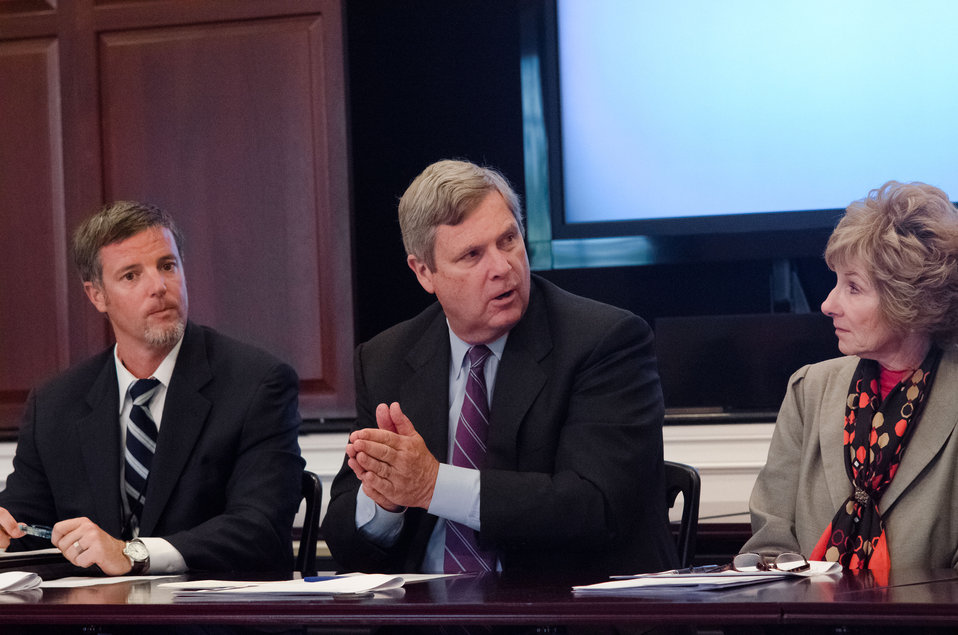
Agriculture Secretary Tom Vilsack (center), chairs a meeting of the White House Rural Council at the White House in Washington, D.C. on Friday, Oct. 5, 2012. White House Domestic Policy Council Senior Policy Advisor for Rural Affairs Doug McKalip (left) moderated the event and Federal Disaster Recovery Coordinator Colleen Callahan (right) spoke with the White House Rural Council as they discuss recent White House announcements and Secretary Vilsack asked council members to outline their work plan for the coming months.